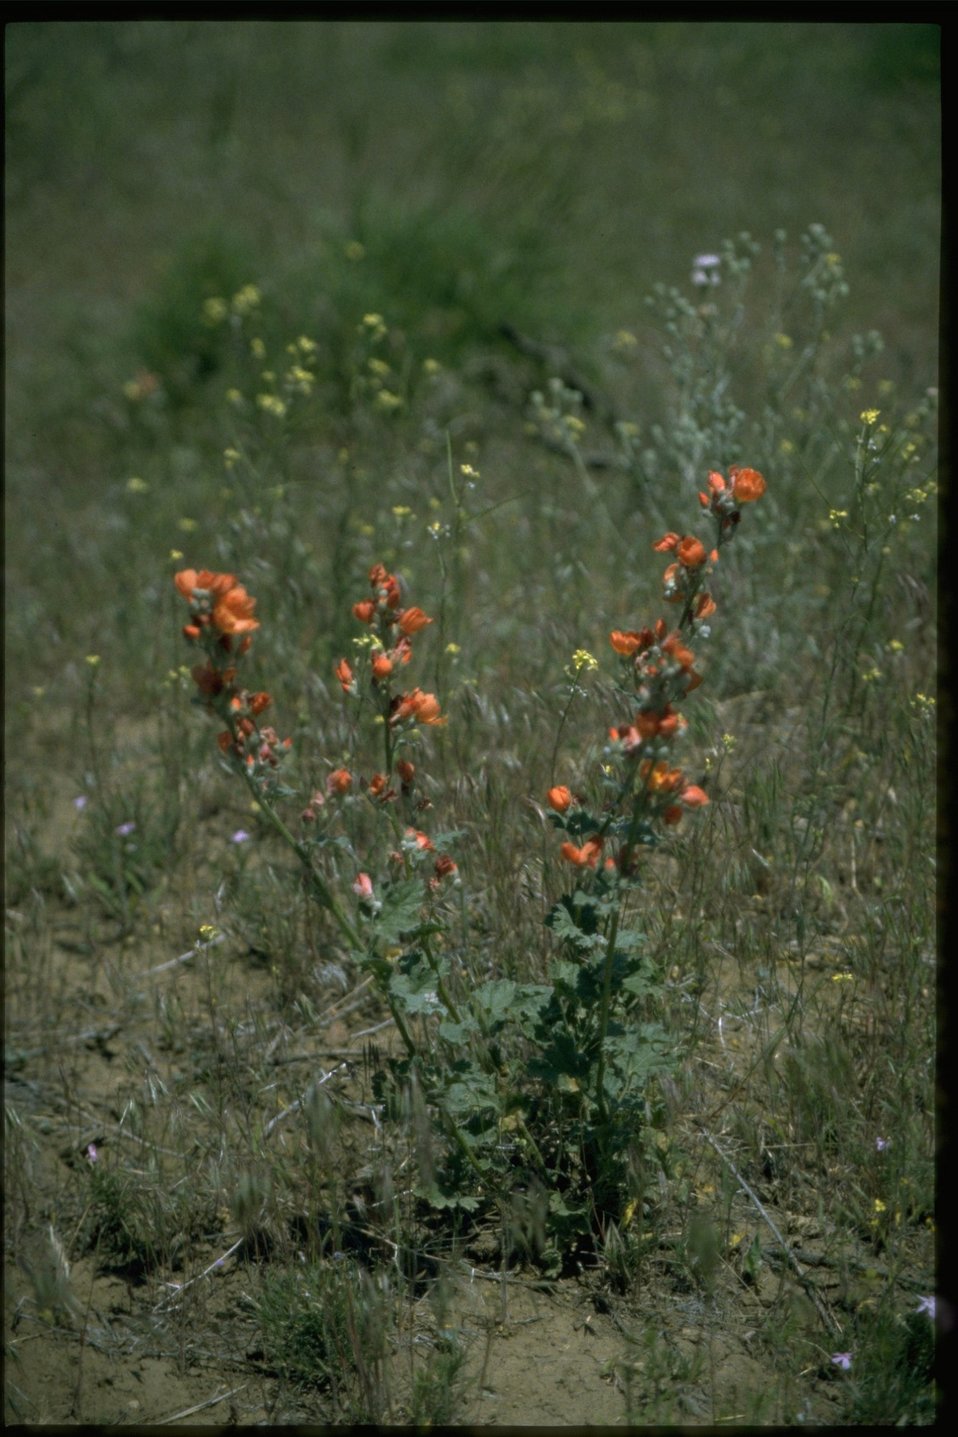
Medium shot of Sphaeralcea grossular ide folia, Red Glove Mallow.